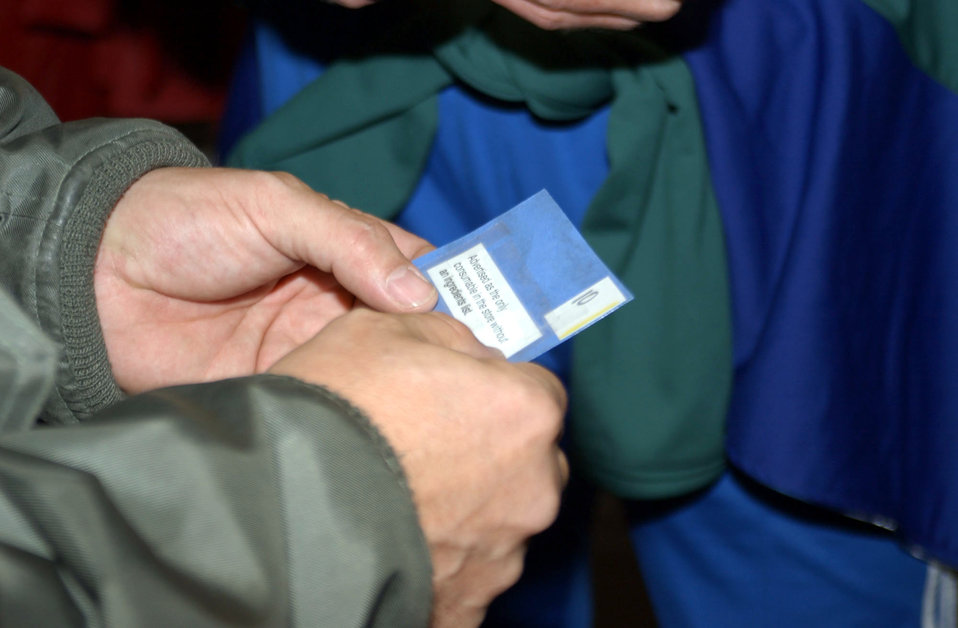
'The Amazing Race'

PETERSON AIR FORCE BASE, Colo. -- Race participants use clues to find items during the scavenger hunt at the base exchange as part of a special competition. Space and Missile Systems Center Detachment 11 and Electronic Systems Center Detachment 5 airmen designed a course that took teams around Peterson to compete in a wide variety of challenges. Six teams participated in the race based on the television reality show,